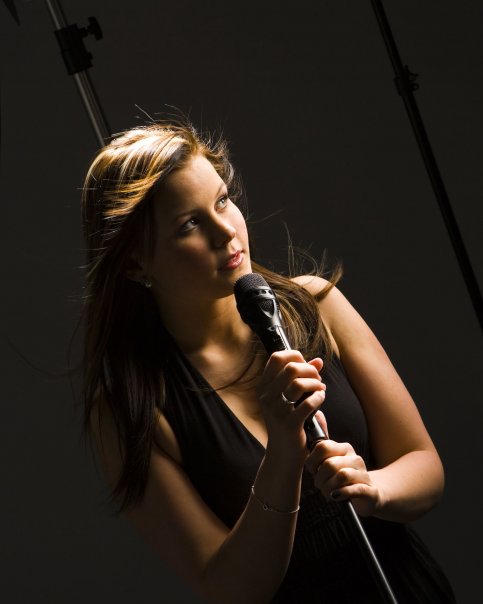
Norwegian singer Camilla Sky Norsk bokmål: Foto: Hasselø